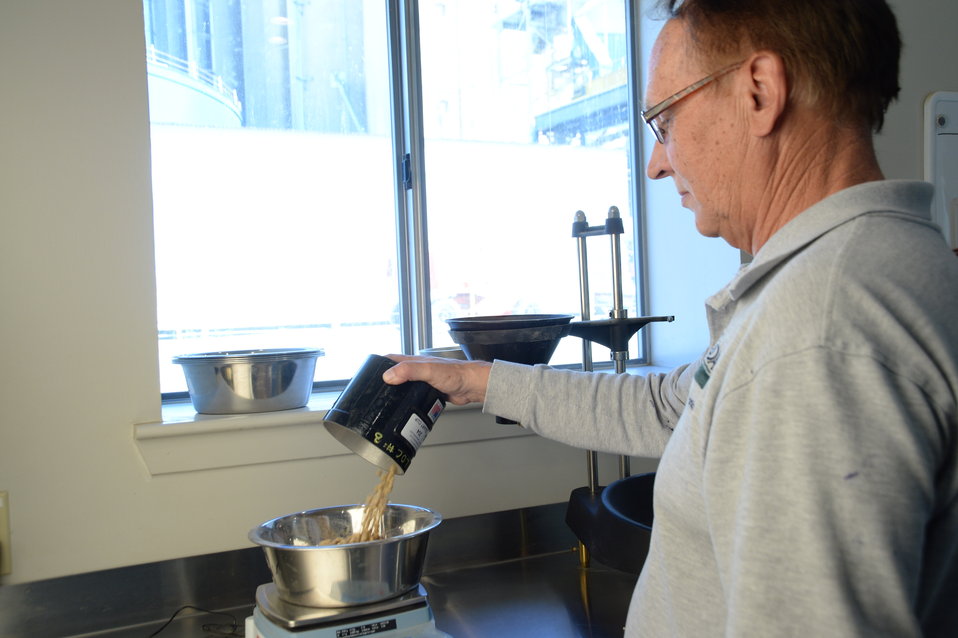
U.S. Department of Agriculture (USDA) Grain Inspection, Packers and Stockyards Administration (GIPSA) Federal Grain Inspection Service (FGIS) employee weighs U.S. grain ready for export near the Port of New Orleans in New Orleans, LA on Tuesday, Nov. 19, 2013.